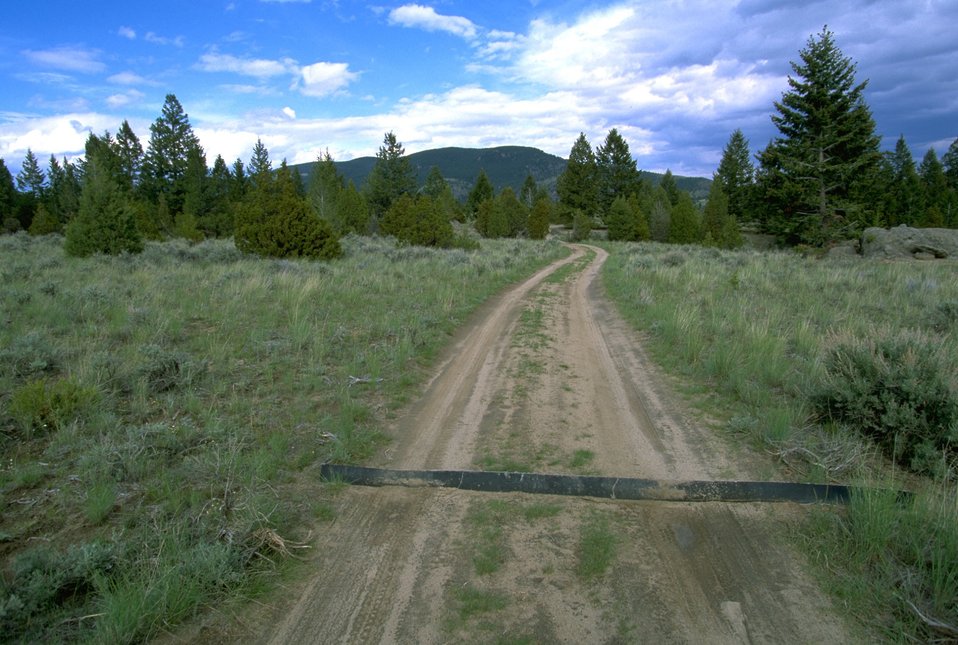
Road with water bar in the Pipestone Hills